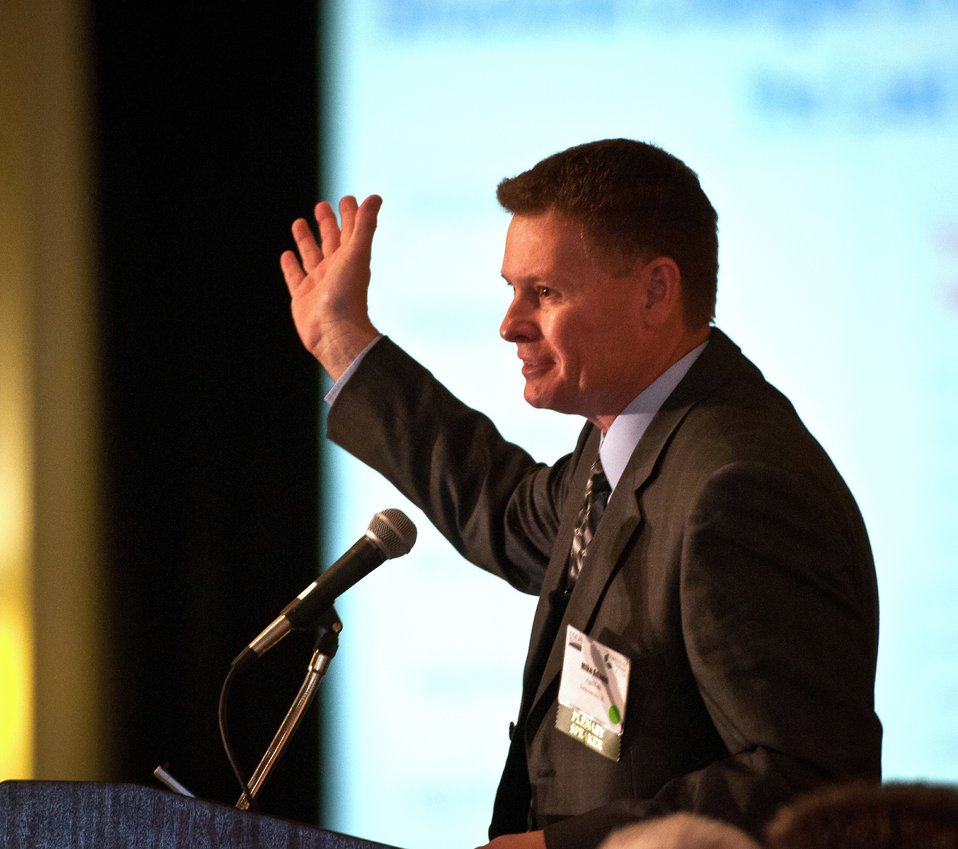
AgriTalk Radio's Mike Adams speaks during the 'Plenary Panel: Managing Risk in Today's Markets' during the 2013 Agricultural Outlook Forum, held at the Crystal Gateway Marriott Hotel, Arlington, Virginia on Thursday, Feb. 21, 2013. This annual Forum brings together producers, policymakers, and business, government, and industry leaders to meet, exchange ideas, and discuss timely agriculture issues.